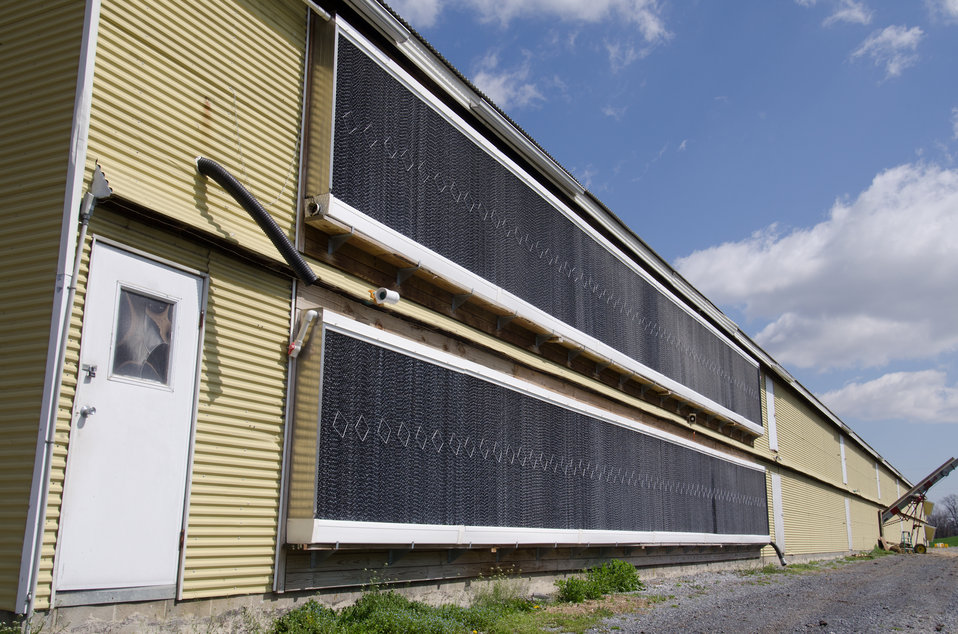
Evaporative cooling element at the Roxanne Molnar Farm, recycles water through these elements to capture heat from the air drawn through it in Grantville, PA on April 21, 2011. Roxanne and Matthew Molnar have an 80,000 chicken poultry farm that received a $20,000 Rural Energy for America Program (REAP) grant. The money is a portion of the cost to modernize the second of two 40,000 chicken capacity chicken houses. Chickens need to be kept at a comfortable temperature to remain productive. New radiant heaters keep the chickens warm during Pennsylvania winters in their hilltop location. On warm days, ceiling vents provide passive venting of heat out of the building (along entire side of the house, midway up); when chicken temperatures are estimated to be above 90 degrees, fans come on, pulling air through water evaporator elements (black panels) bring air temperature down 10-15 degrees then flows along the chicken house's length, providing a tunnel of cooled air. The benefits to the chickens are heat and excess moisture removal; minimized dust and odor; limits buildup of ammonia and carbon dioxide; and provides oxygen for respiration. All these systems are computer controlled allowing owner, Roxanne Molnar to run the farm by herself and raise two small boys Gavin (2) and Grant (5). Husband, Matthew works off the farm and frequently travels, so along with the demands of parenting and manually controlling fans, vents, and having to remove the 80,000 chickens from their feeders and moving around to cool them was an increasingly daunting task. The computer controls of the new system automate many of the daylong tasks allowing the Molnars to run their family farm.